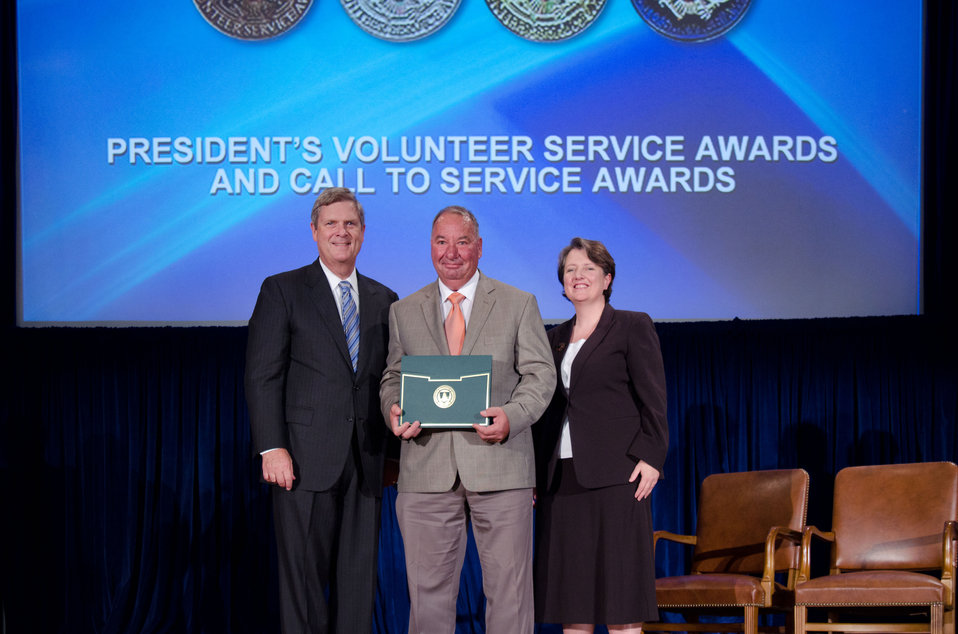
Agriculture Secretary Tom Vilsack (l) and Deputy Secretary Kathleen Merrigan (r), presents the President’s Volunteer Service Awards and Call to Service Award to Daniel Renneke, Food Safety and Inspection Service. On Wednesday, September 14, 2011 in the Jefferson Auditorium at the US Department of Agriculture in Washington, DC.